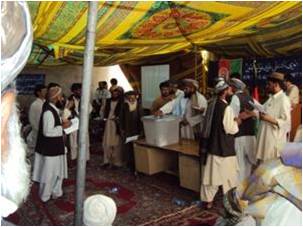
IDLG and PRT Governance Team Hold District Community Council Elections in Nad-e-Ali District